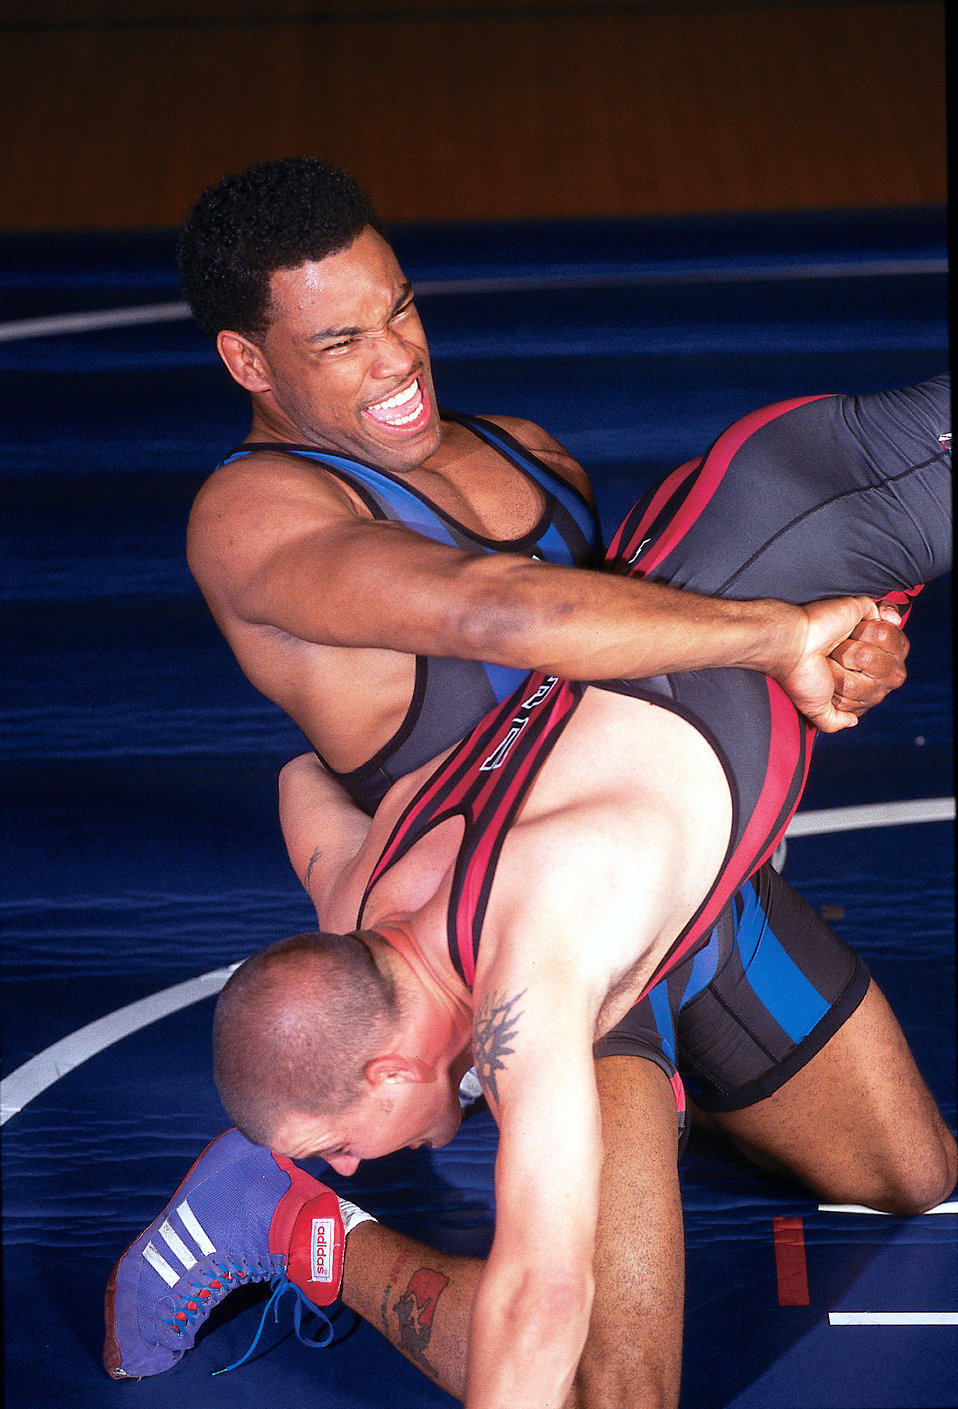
Pinned!

LACKLAND AIR FORCE BASE, Texas -- Staff Sgt. Steven Woods (in blue) took the gold medal in the 74-kilogram (163-pound) weight class in Greco-Roman wrestling at the 2004 Armed Forces Wrestling Chapionships. Sergeant Woods is assigned to the 10th Services Squadron at the U.S. Air Force Academy, Colo.